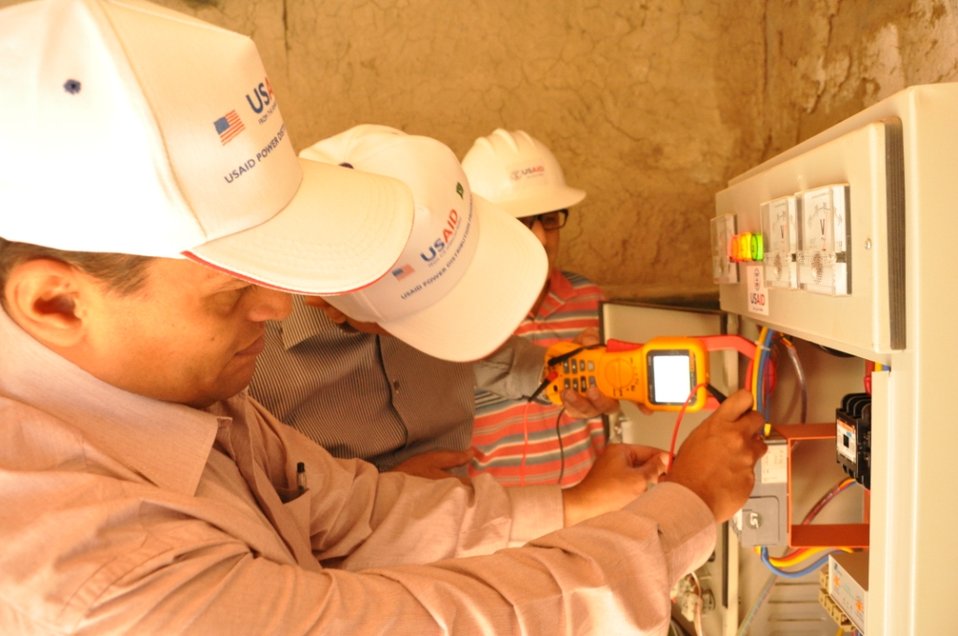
Usaid To Provide Technical Assistance To Improve Efficiency Of Tube-Wells In Iesco By Installing 2600 Lt Capacitors at Islamabad on April 26, 2012